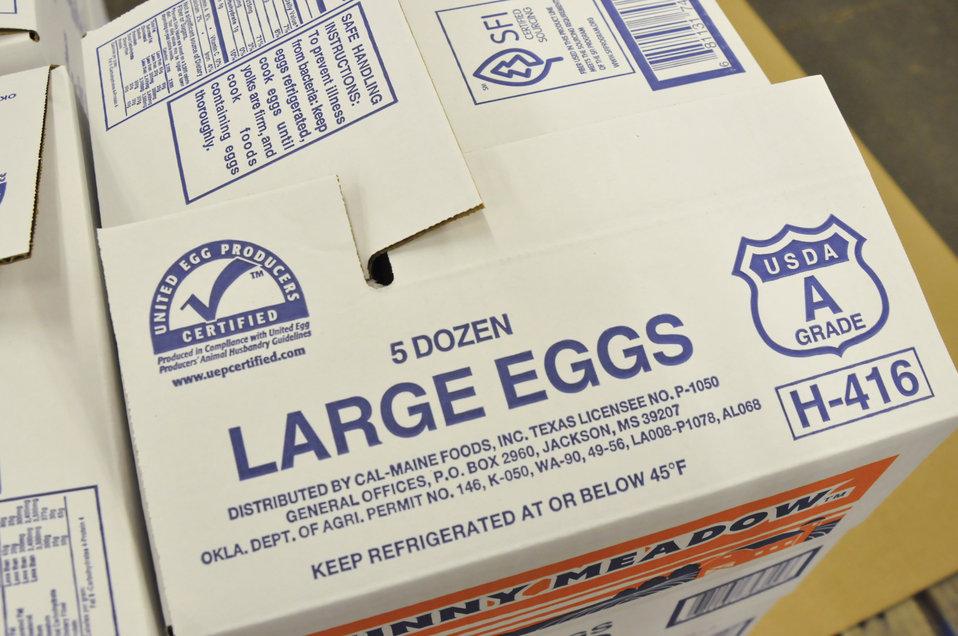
Shell eggs are graded at Cal-Maine Foods Inc. in Green Forest, Arkansas by the U.S. Department of Agriculture (USDA) Agricultural Marketing Service (AMS) on March 24, 2010. Shell eggs are produced on farms with a few thousand laying chickens or in large laying complexes with over a million layers. All shell eggs are eligible for the grading and certification services provided by the USDA AMS Poultry Programs.